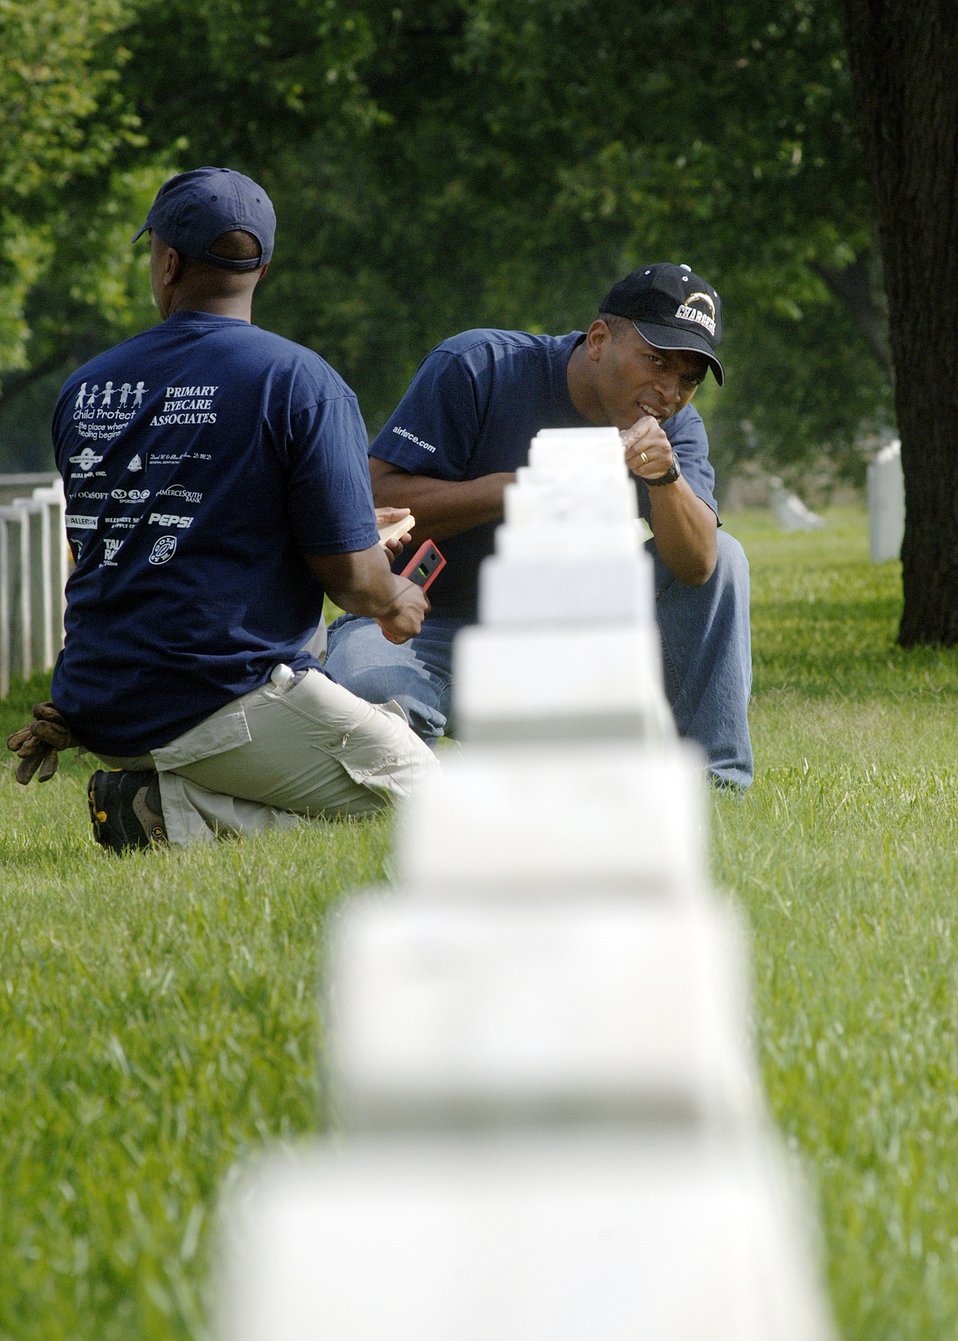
Serving those who served

Airmen volunteers straighten headstones May 15 at the Fort Sam Houston National Cemetery in San Antonio. This process aligns and straightens all the headstones and prepares the cemetery for funerals and the upcoming Memorial Day weekend. Airmen assigned to the Air Force News Agency in San Antonio spent the day adjusting the headstones.